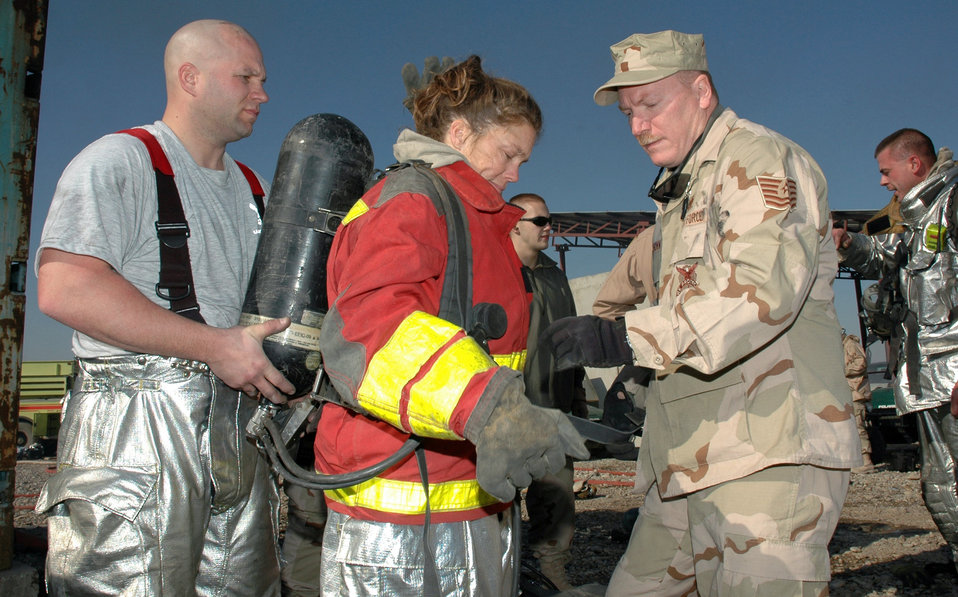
Smoke trainer

KIRKUK AIR BASE, Iraq (AFPN) -- (From left) Tech. Sgt. Matt Lyons holds a compressed air tank for Capt. Cindy Lang as Tech. Sgt. Charles Brown assists her with the donning of the protective fire suit. Sergeant Lyons is the assistant chief of training, and Sergeant Brown is a battalion fire chief here. Captain Lang is a critical care nurse who volunteered to experience the smoke simulation burn trainer.